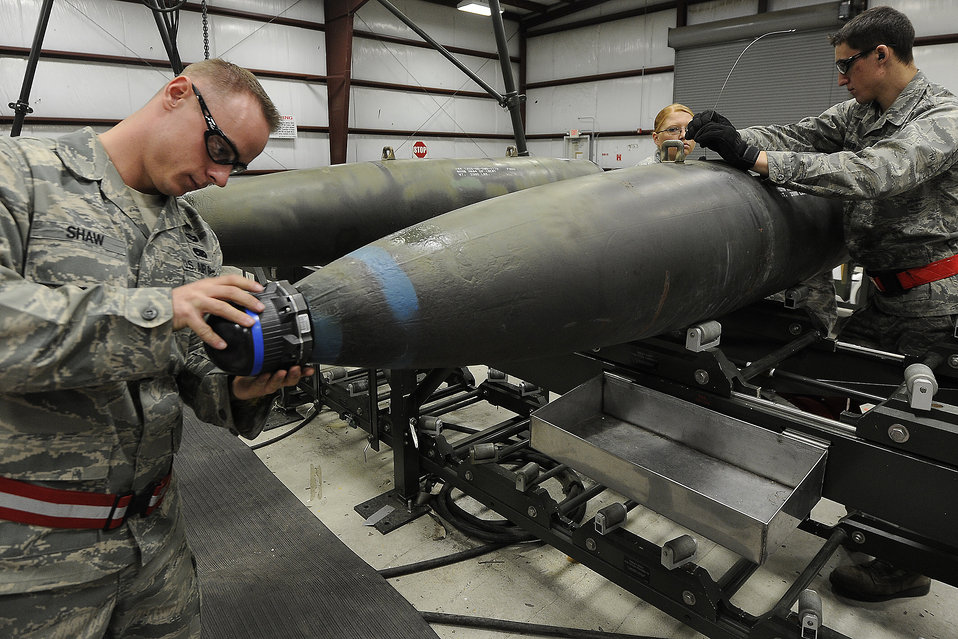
Locked and loaded

Airmen assigned to the 388th Munitions Squadron assemble a guided bomb unit-31 joint direct attack munition March 4, 2011, at Hill Air Force Base, Utah, as part of an operational readiness exercise.